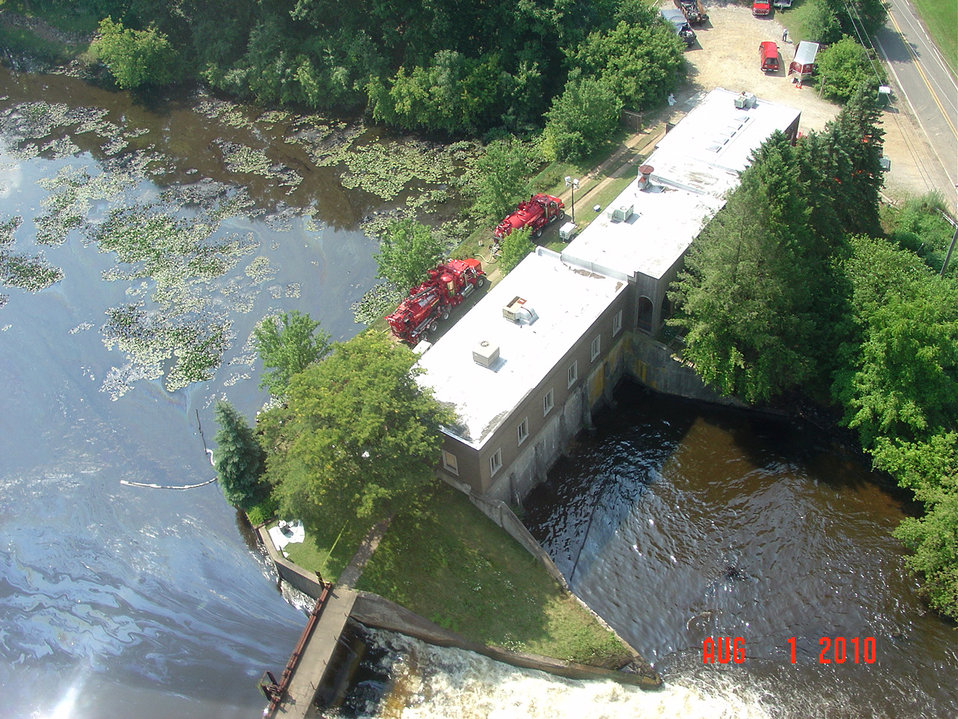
EPA's response to the Enbridge oil spill

August 1, 2010 - Response operations near Cerseco Dam on the Kalamazoo River, Michigan.